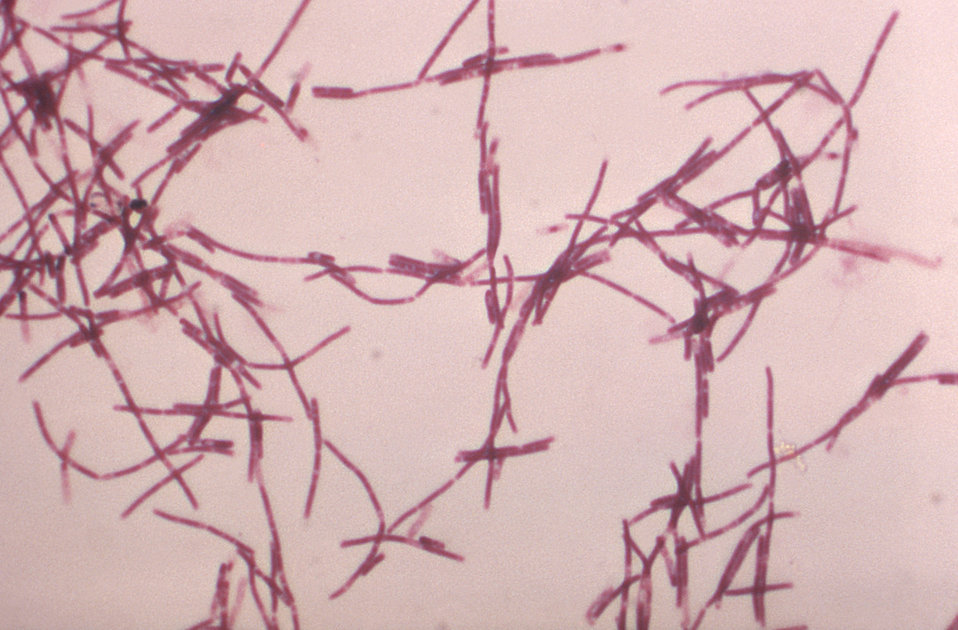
This Gram-stained photomicrograph reveals numerous rod-shaped Bacillus anthracis bacteria that had linked together to form long filamentous chains.